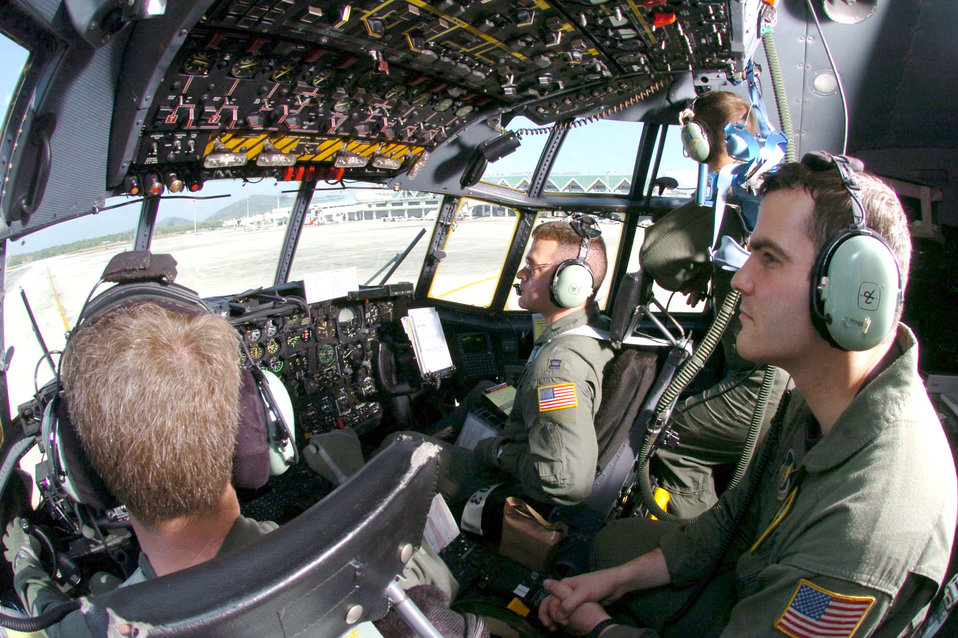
Yokota C-130s continue to fly aid to tsunami victims

PHUKET, Thailand -- A C-130 Hercules crew taxis out after they transported an engineering assessment team here Jan. 8. The crew is assigned to the 36th Airlift Squadron at Yokota Air Base, Japan. The squadron first delivered relief supplies and equipment to tsunami-devastated areas in Thailand, Indonesia and Sri Lanka on Dec. 29. The Airmen are (from left) Maj. Brian Geronime, Capt. Jason Fodor, Staff Sgt. Michael Whipple and 1st Lt. Matthew Campbell.